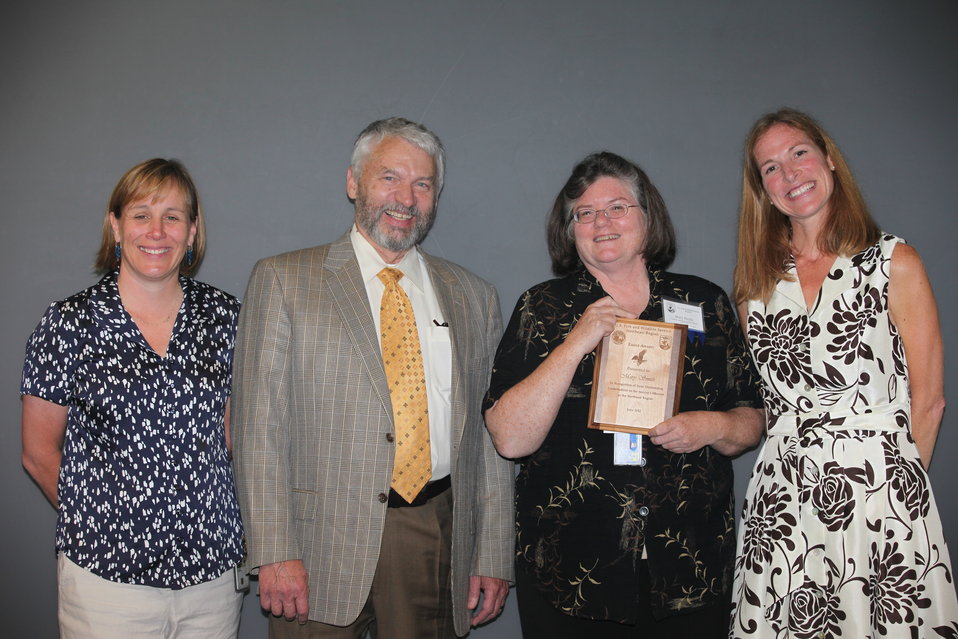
Mary Smith of the Regional Office for Contracting and General Services recieved the Eagle Award.
From left to right: Deputy Regional Director Deb Rocque, Deputy Director Rowan Gould, Mary Smith and Regional Director Wendi Weber